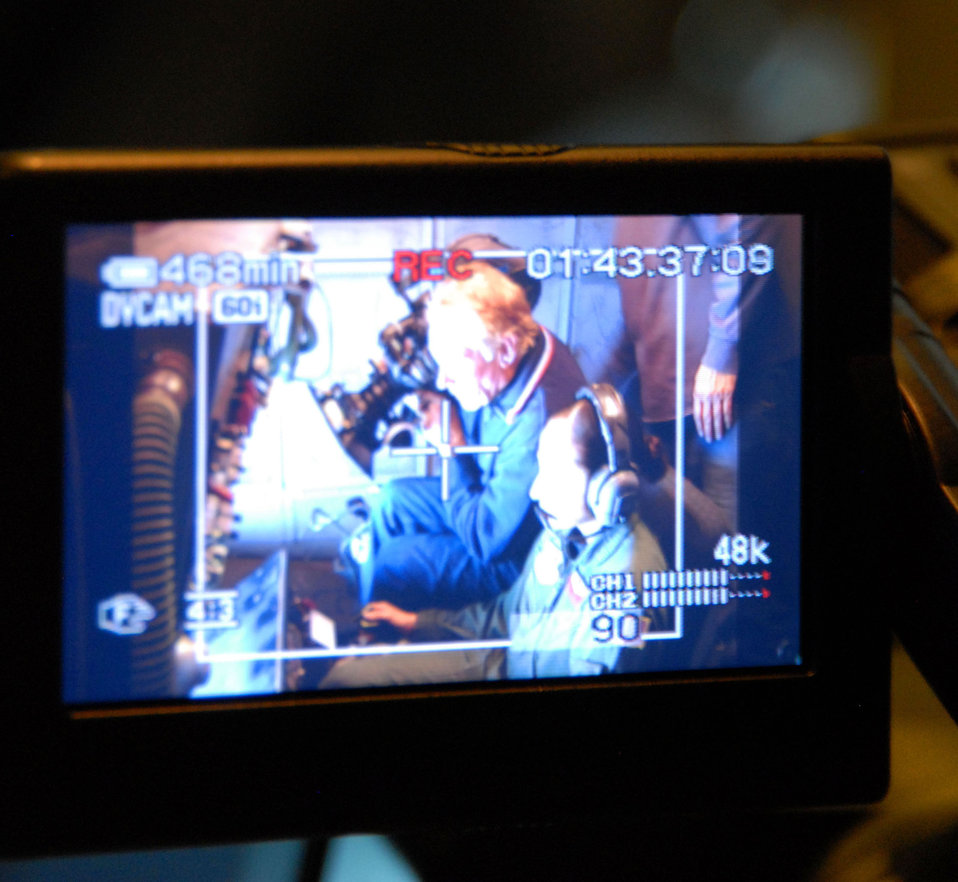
Edwards, Travis Airmen 'Do something amazing'

As seen through the screen of a video camera, Staff Sgt. Lucero Stockett (front) performs an aeriel refueling of an F-22 Raptor while Eric Saarinen films the event on board a KC-10 Extender Feb. 7 above Edwards Air Force Base, Calif. Sergeant Stockett is a KC-10 boom operator from Travis AFB, Calif. Mr. Saarinen is a director and cameraman filming a new round of Air Force commercials.